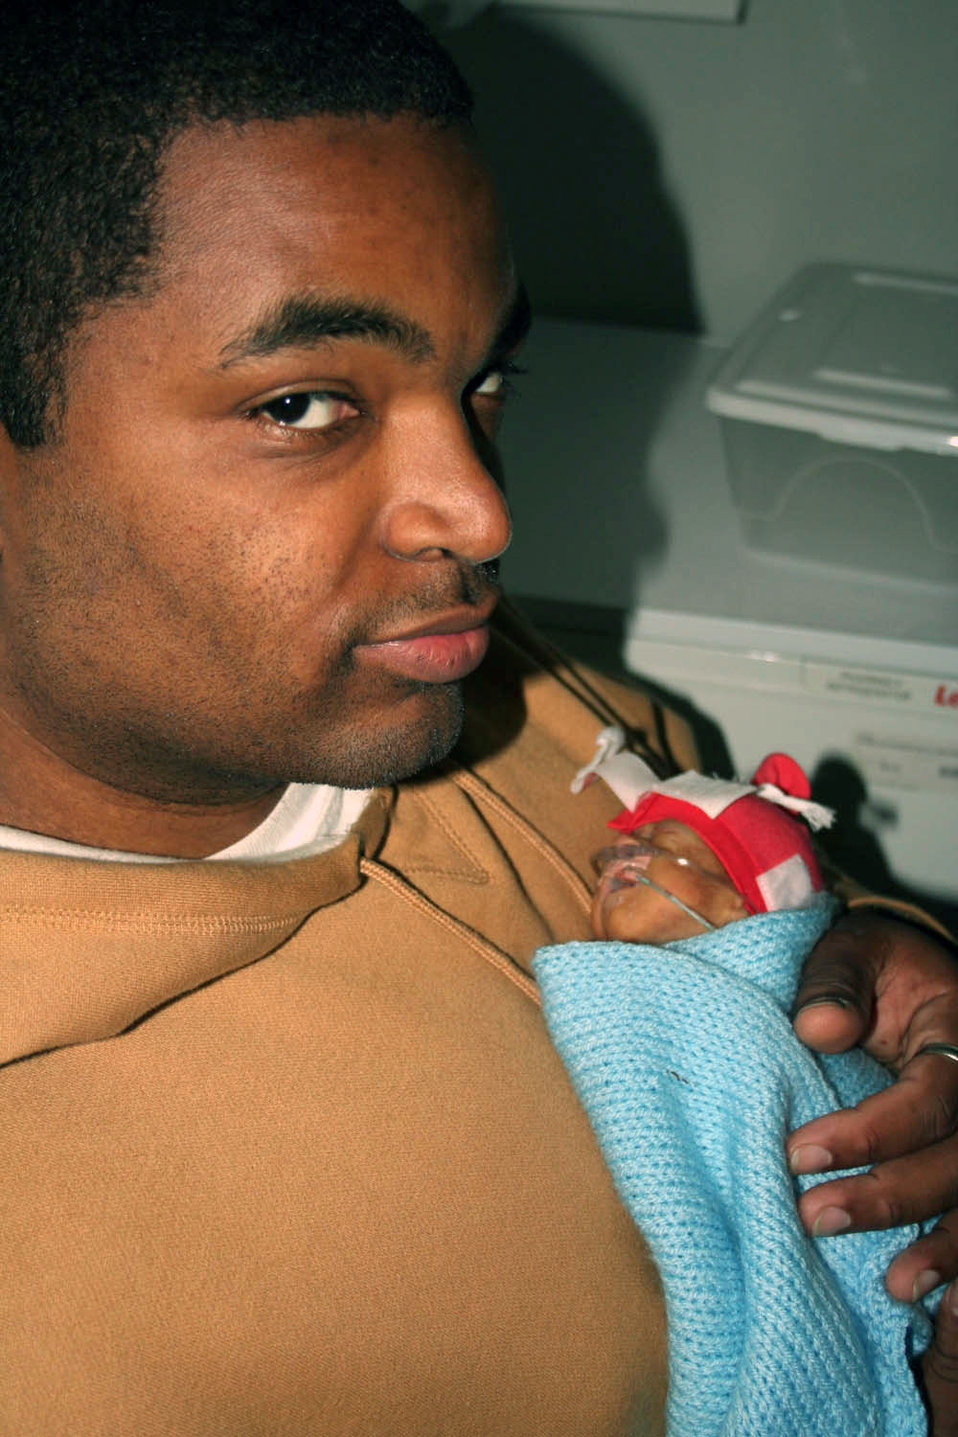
Premature twin's fight for life leaves lasting legacy

Tech. Sgt. Barry Frazier holds his premature son, Eric LeVon Frazier, in November at Norfolk and Norwich Hospital in England. Born Sept. 6, almost four months prematurely, Eric and his twin sister stayed in a local British hospital on the neonatal intensive care ward. Eric passed away Dec. 10. Sergeant Frazier is assigned to the 100th Air Refueling Wing Legal Office at Royal Air Force Base Mildenhall, England.